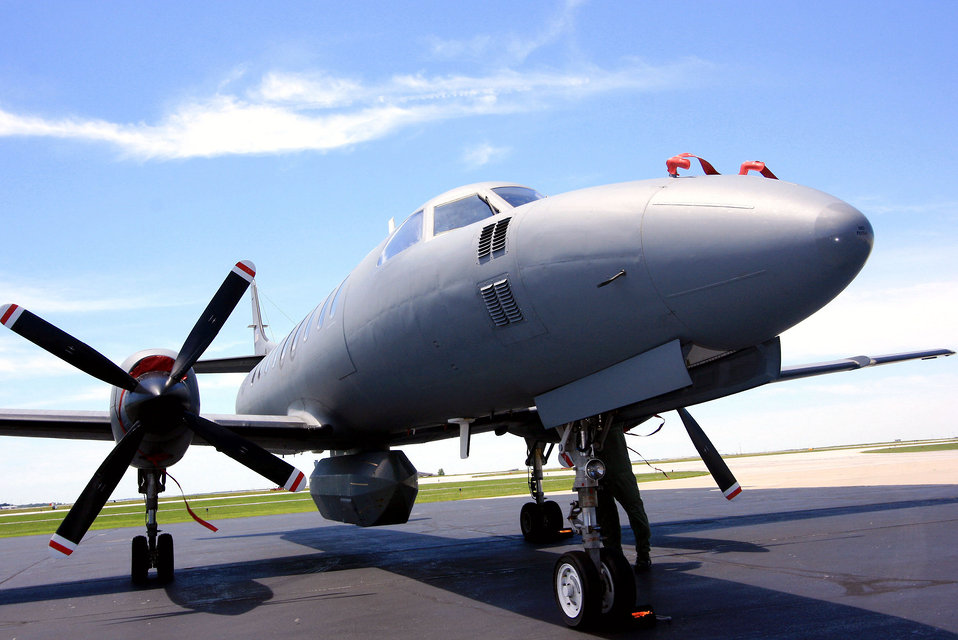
Air Guard plane photographs flood damage

An RC-26 aircraft provided live footage about washed out roads, damage to infrastructure and other information that Indiana may have lacked June 11 for the Indiana National Guard. The aircraft and aircrew were from the 130th Airlift Wing out of Charleston, W.V.